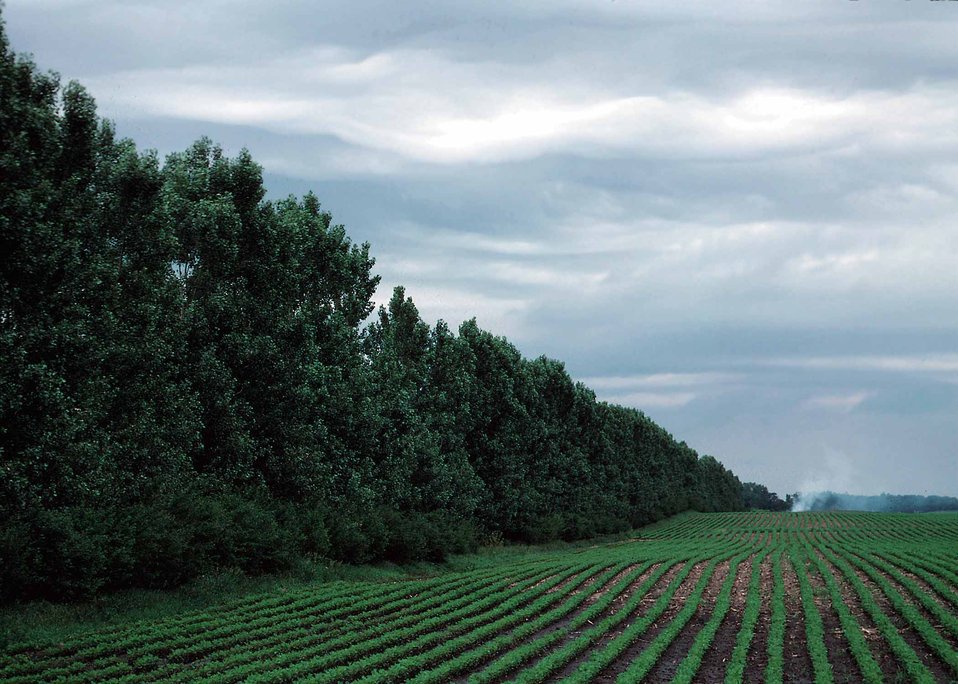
Field windbreak in northwest Iowa.